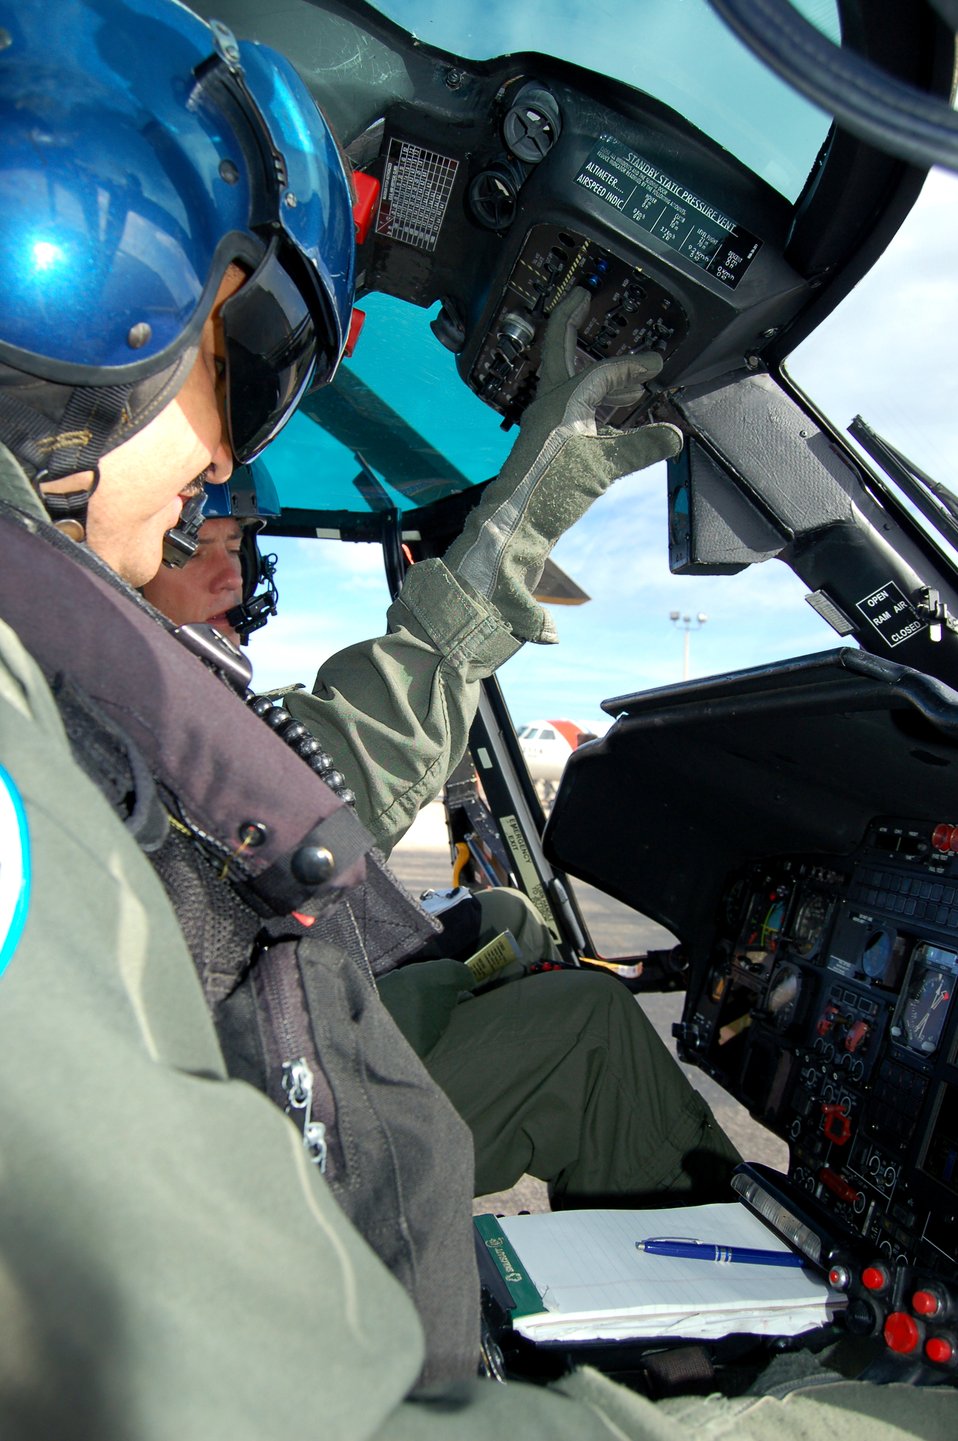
Coast Guard pilot traces roots to Air Force education opportunities

Coast Guard Lt. Cmdr. Juan Lopez prepares an HH-65C Dolphin for flight March 21 at Coast Guard Air Station Borinquen, Puerto Rico. A former Senior Airman, Commander Lopez is an aircraft commander and the assistant operations officer at the air station. The Coast Guard provides a search and rescue capability for 1.2 million square miles around the Caribbean.